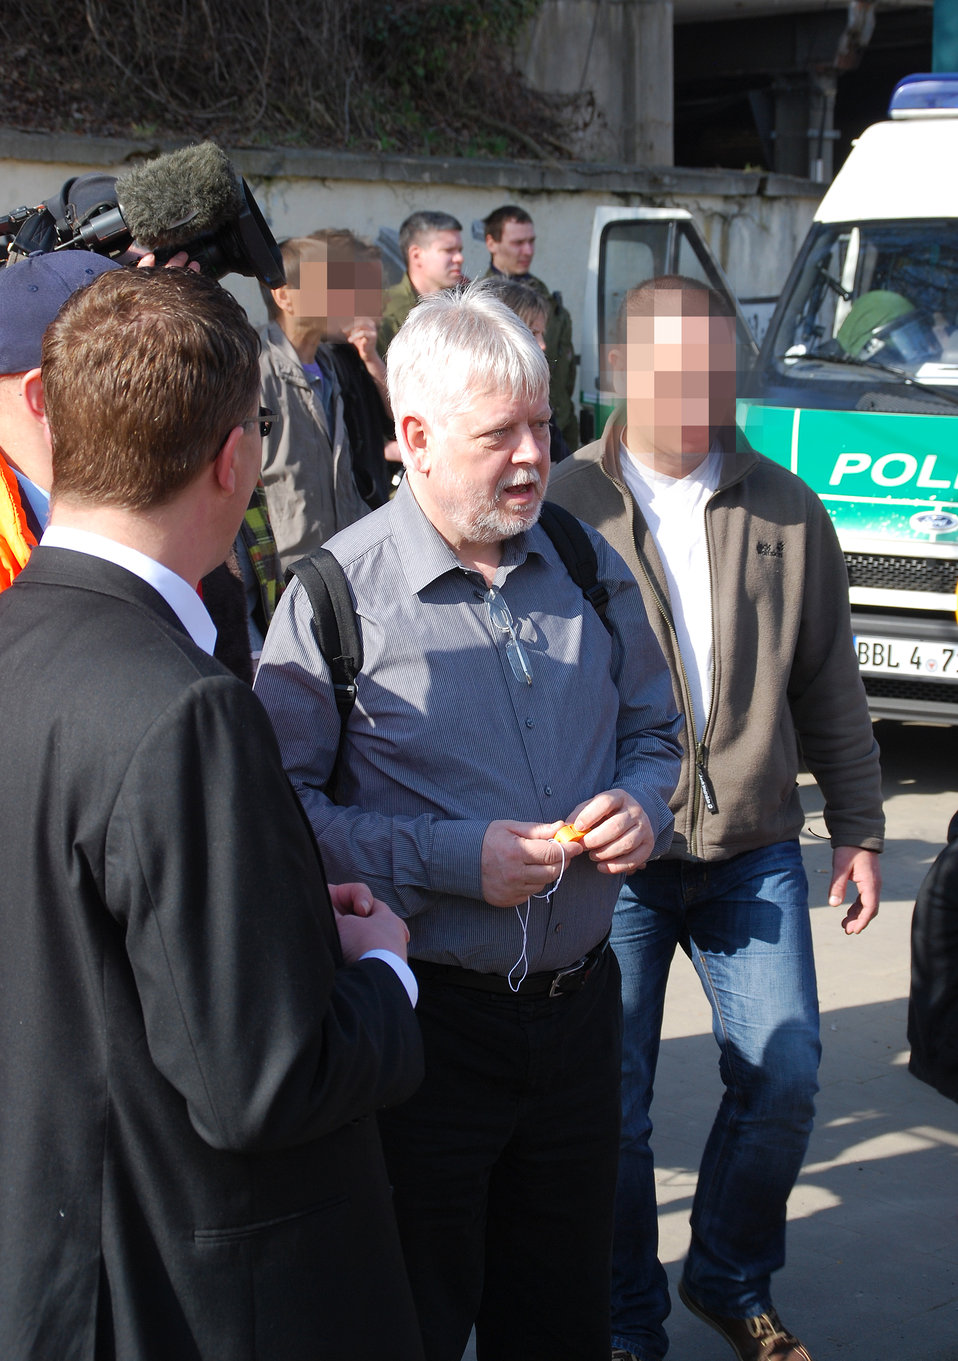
Proteste gegen den Nazi-Aufmarsch am 24.3.2012 in Frankfurt (Oder), mit Helmuth Markov, Finanzminister des Landes Brandenburg